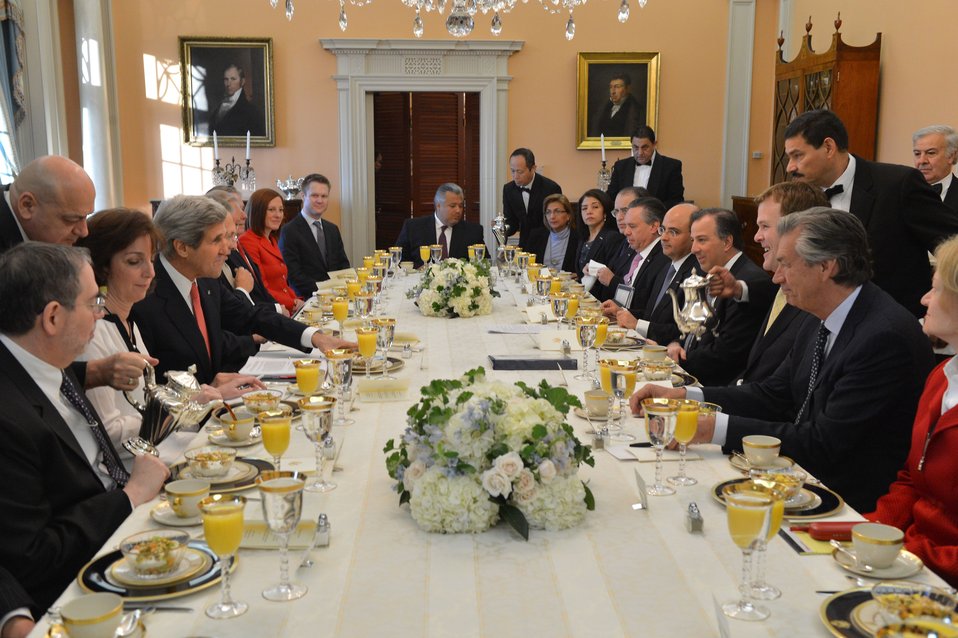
Secretary Kerry Hosts a Breakfast With His North American Counterparts

U.S. Secretary of State John Kerry hosts a breakfast with his North American counterparts, Canadian Foreign Minister John Baird and Mexican Foreign Secretary Jose Antonio Meade, during the North American Trilateral Ministerial at the U.S. Department of State in Washington, D.C., on January 17, 2014.